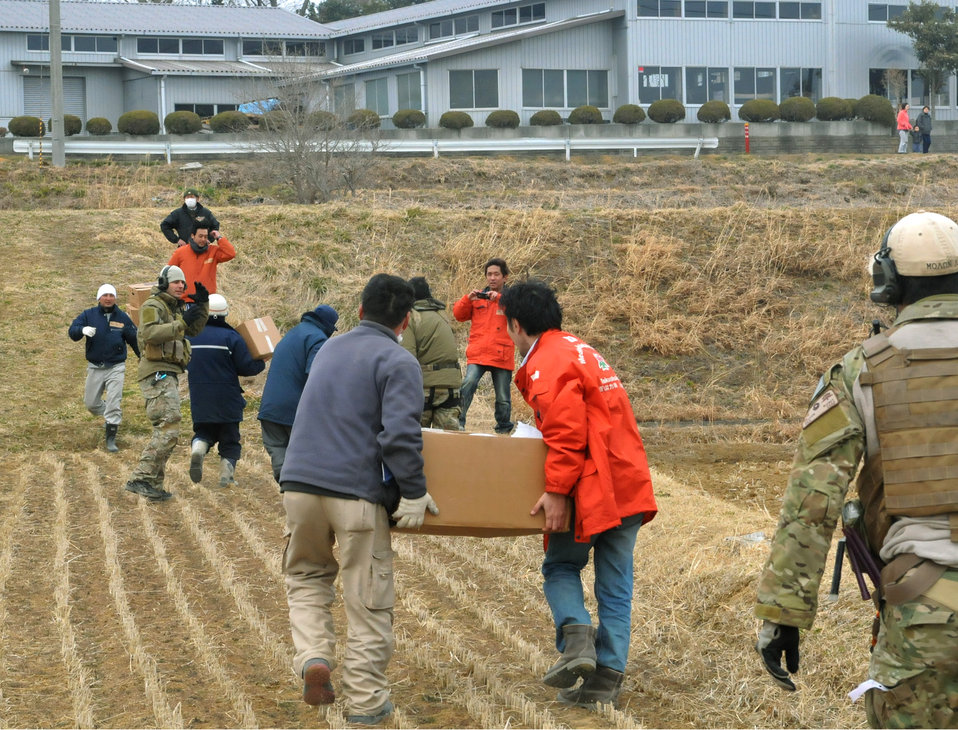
HH-60s deliver supplies to decimated Kessenuma City

Airmen work alongside a team of Japanese medical workers to unload food, water and medical supplies from a pair of HH-60G Pave Hawks March 20, 2011, at Yokota Air Base, Japan. Airmen from the 33rd Rescue Squadron successfully transported supplies to displaced people in Kessenuma City, in support of Operation Tomodachi. Kessenuma experienced massive destruction from the earthquake and tsunami in northeastern Japan, March 11.